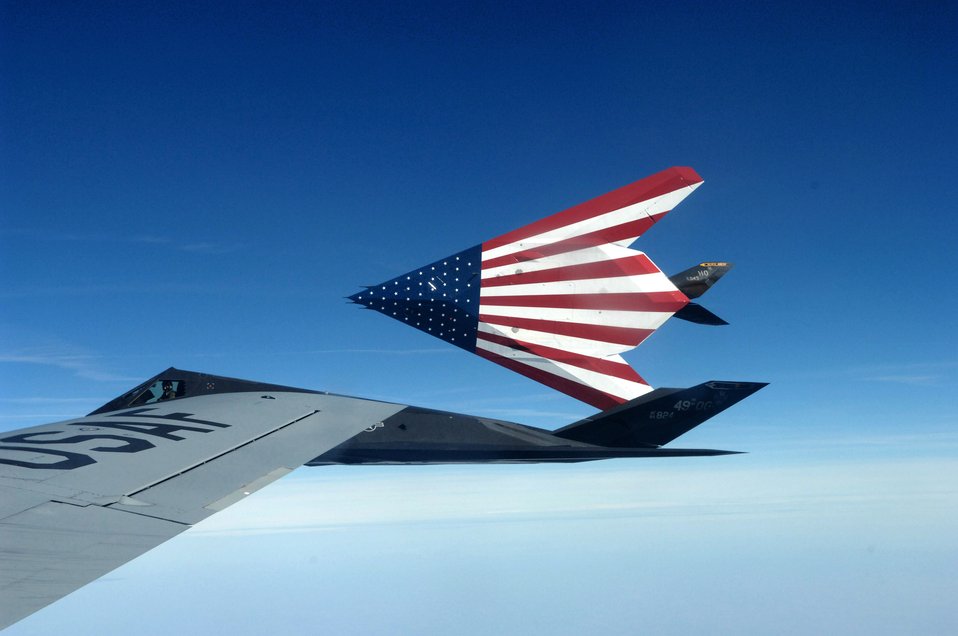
Stealthy stars and stripes

A pair of specially painted F-117 Nighthawks fly off from their last refueling by the Ohio National Guard's 121st Air Refueling Wing. The F-117s were retired March 11 in a farewell ceremony at Wright-Patterson Air Force Base, Ohio.